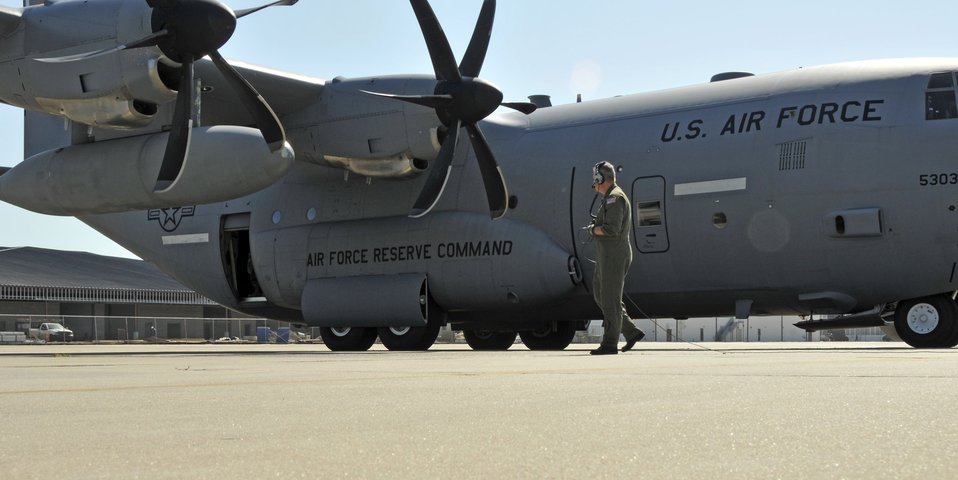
Hurricane Hunters track Ike

Tech. Sgt. Scott Blair prepares to board a WC-130J Hurricane Hunter Sept. 10 at Keesler Air Force Base, Miss. Sergeant Blair is responsible for the safety of the aircraft and is also tasked with launching and gathering weather data through the use of an instrument called a dropsonde. Sergeant Blair is a weather reconnaissance loadmaster.